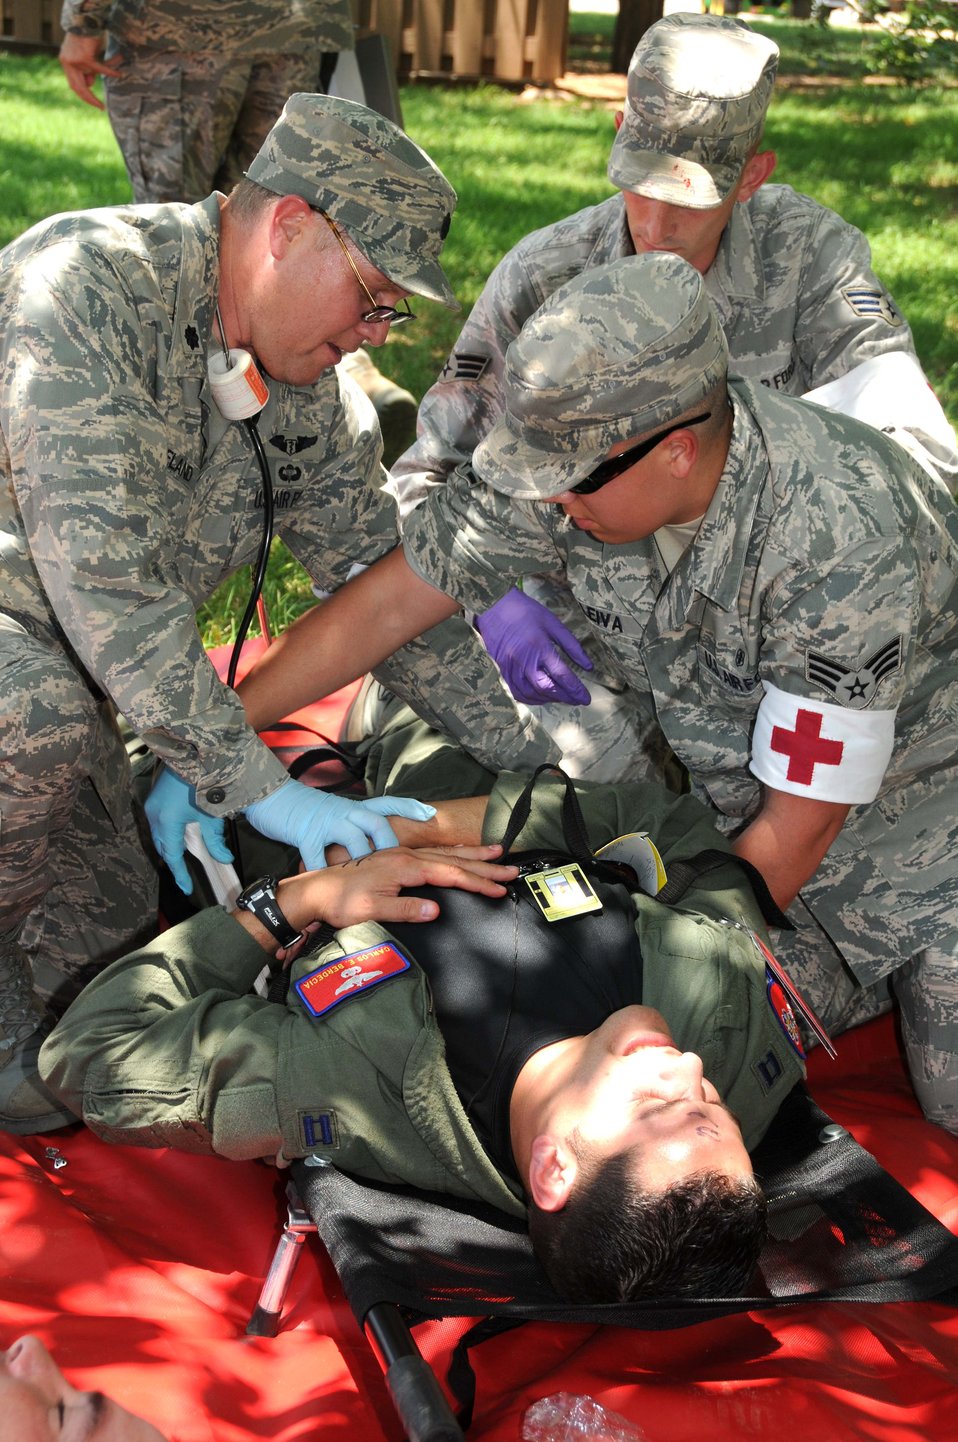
Force protection exercise

Members from the 97th Medical Group at Altus Air Force Base, Okla., provide medical assistance to a